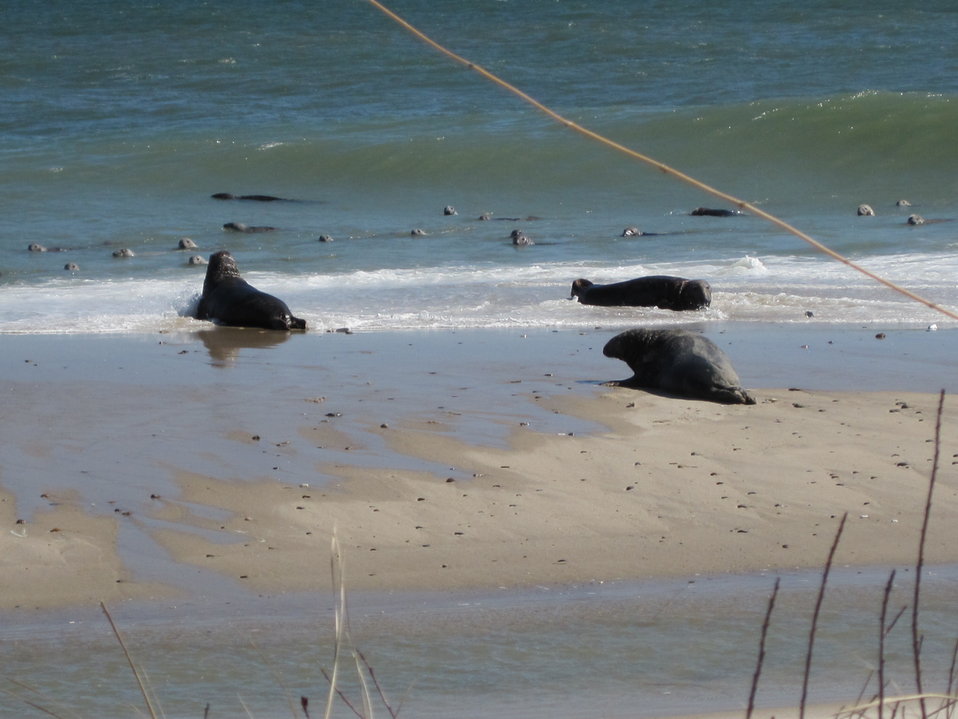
Seals on South Monomoy Island

Seals gather on South Monomoy Island, a few hundred yards from the lighthouse.

Credit: Keith Shannon/USFWS

Monomoy National Wildlife Refuge is part of the Eastern Massachusetts National Wildlife Refuge Complex.